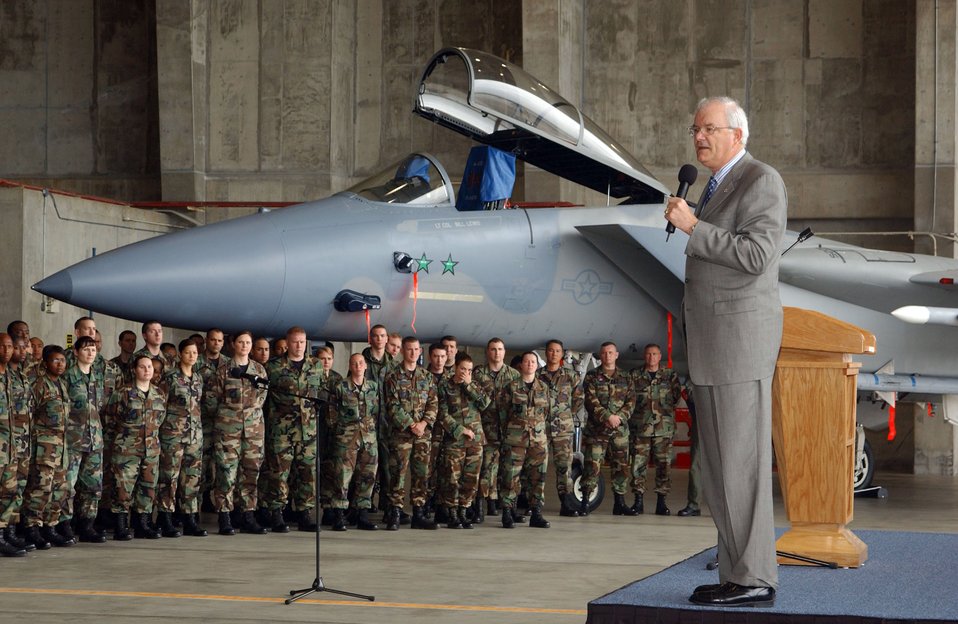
SECAF visits Kadena

Secretary of the Air Force Michael W. Wynne speaks to Airmen during his base tour of Kadena Air Base, Japan, Thursday, March 23, 2006. Secretary Wynne spent two days at the Air Force's largest combat wing as part of his tour of bases in the Pacific theater.